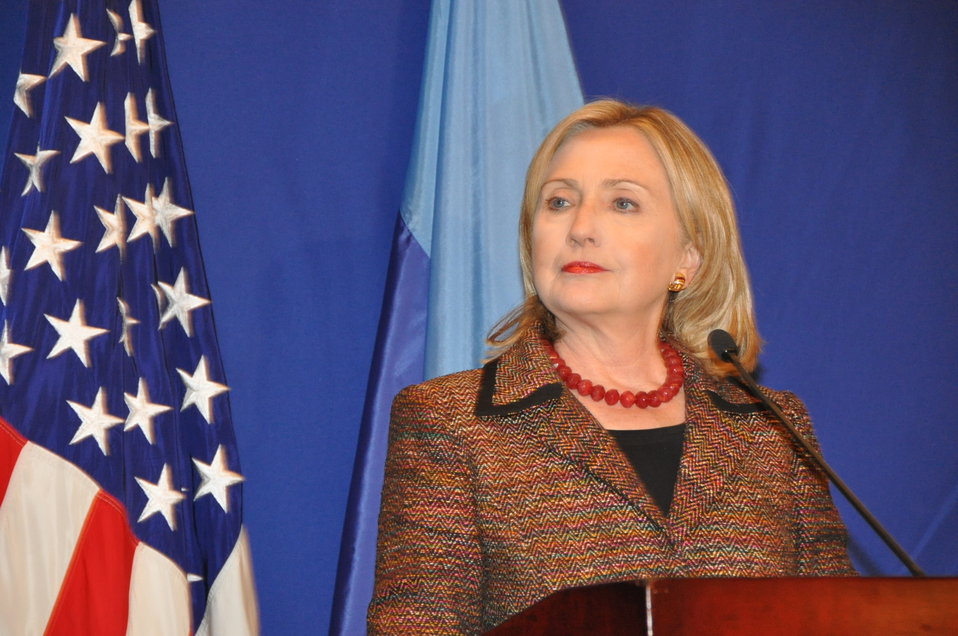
Secretary Clinton Delivers Remarks

U.S. Secretary of State Hillary Rodham Clinton delivers remarks at a press conference with Jamaican Foreign Minister Kenneth Baugh, and St. Kitts and Nevis Deputy Prime Minister Sam Condor in Montego Bay, Jamaica, on June 22, 2011.